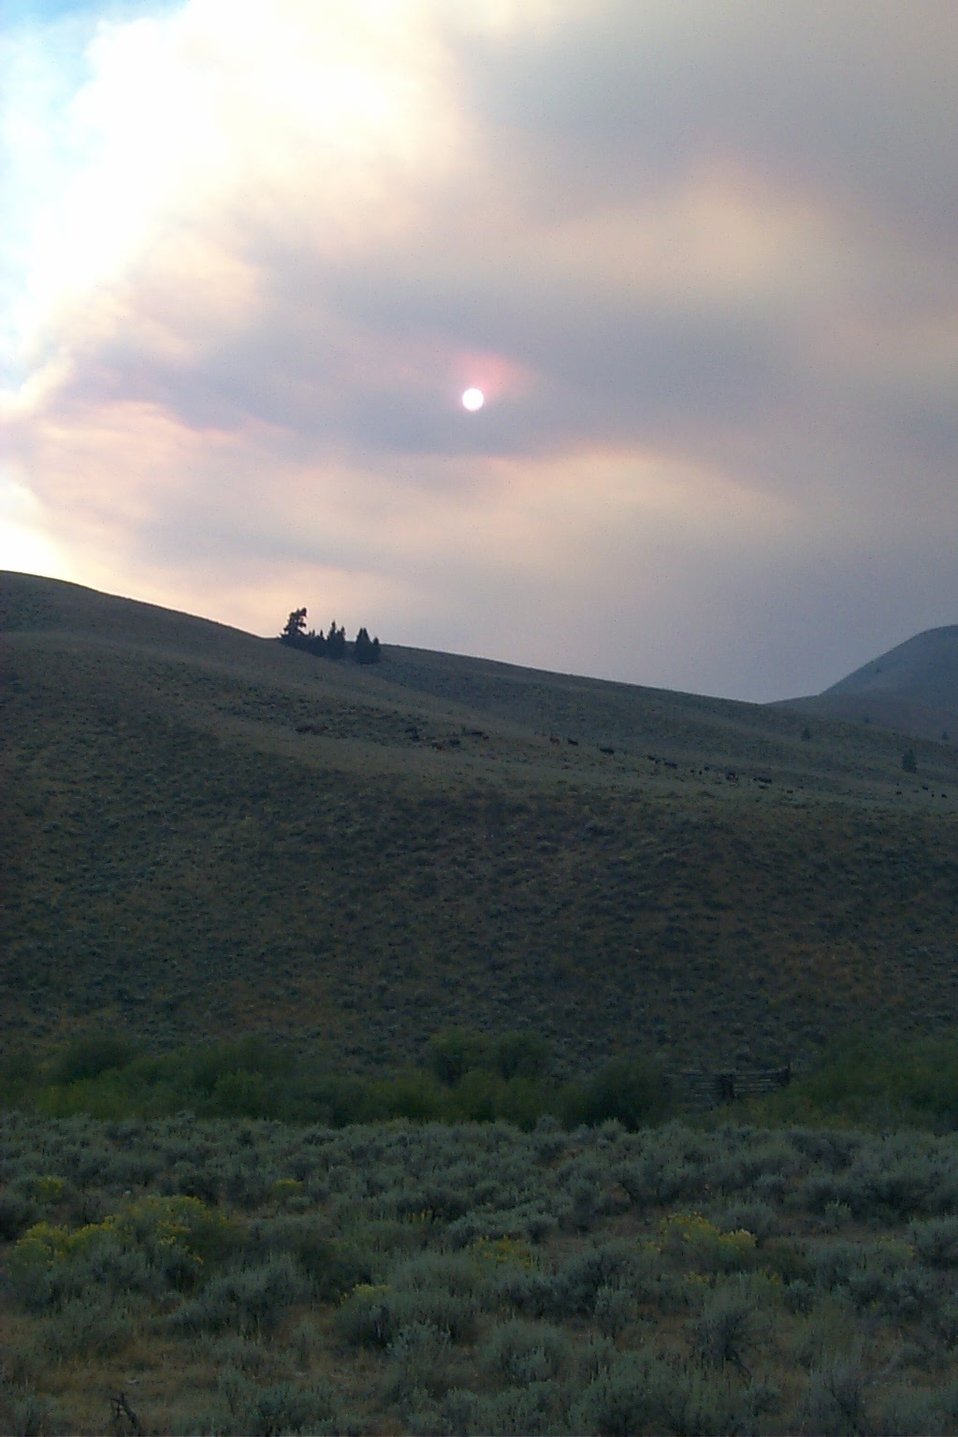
Smoke Fire Clearwater Fire Salmon Field Office USRD Upper Snake River District